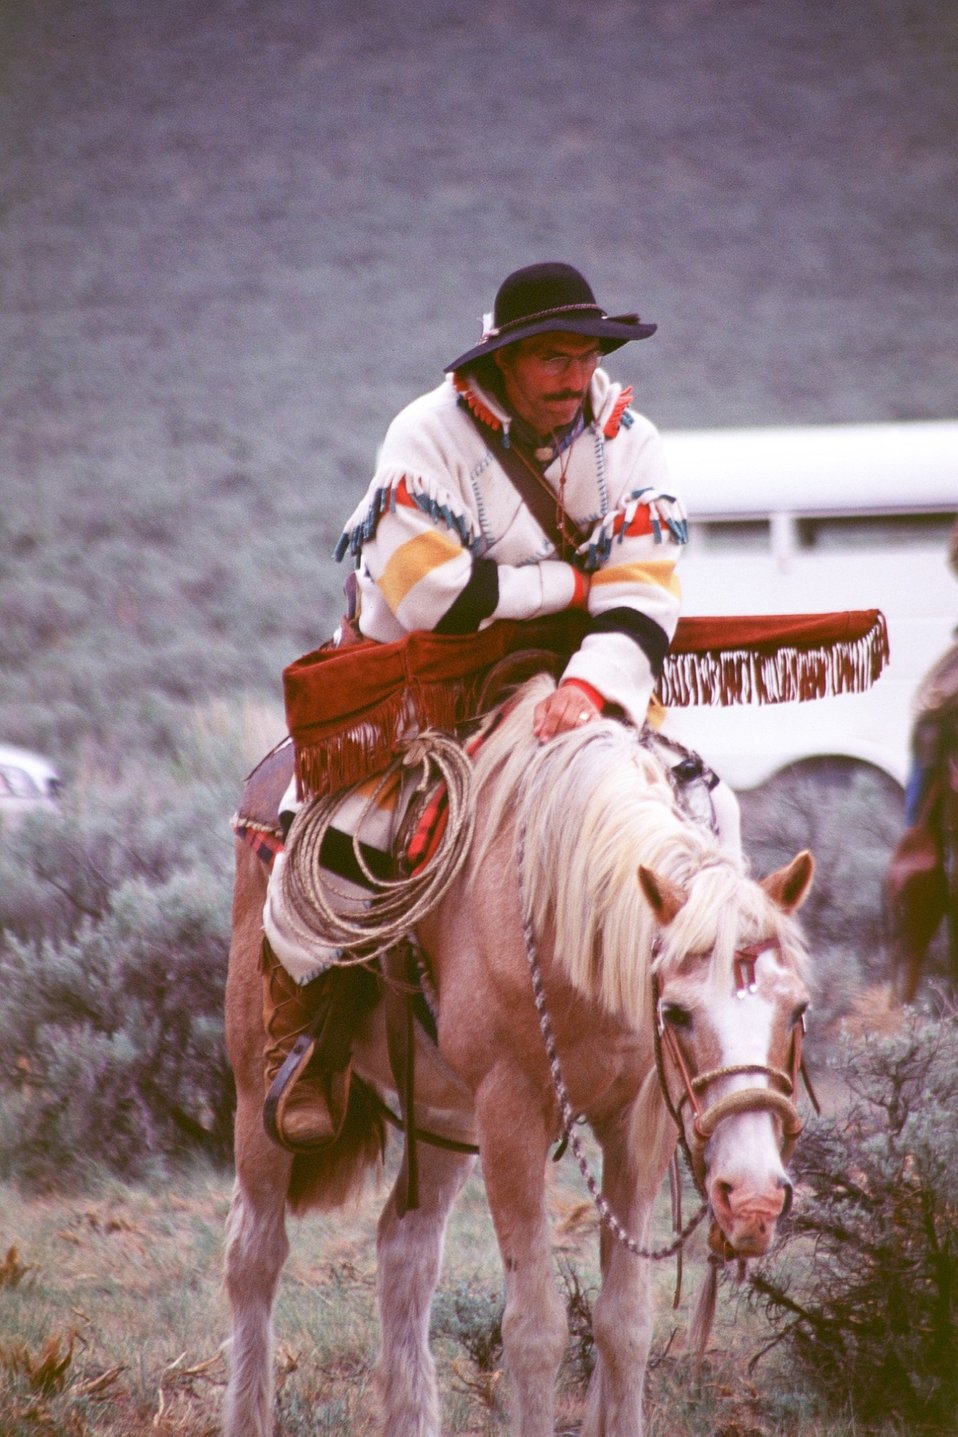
NHOTIC 10th Anniversary, wagon train reenactment. Pioneer scout on horseback.